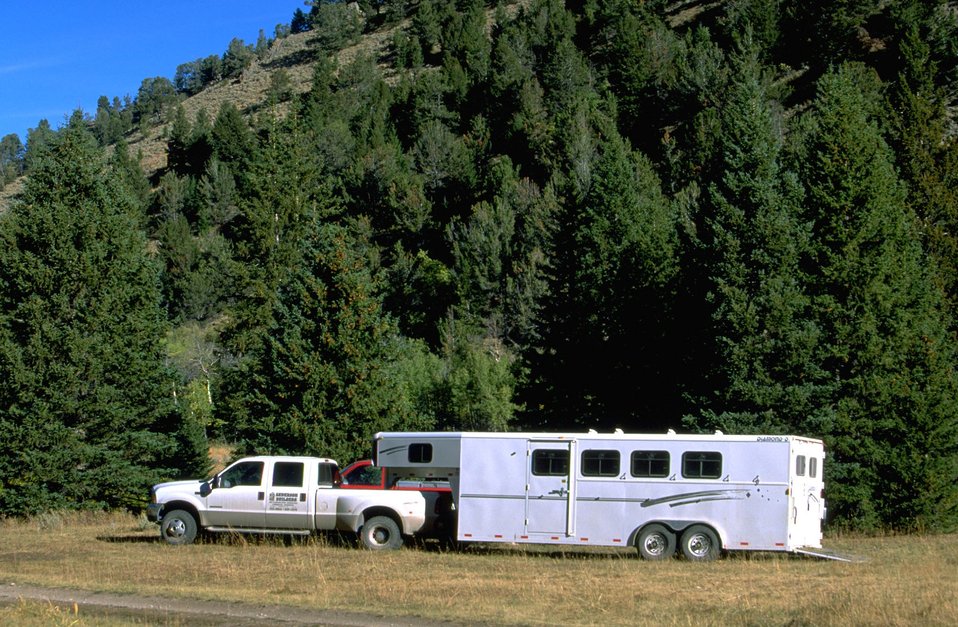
Pickup and horsetrailer at East Fork Blacktail campground